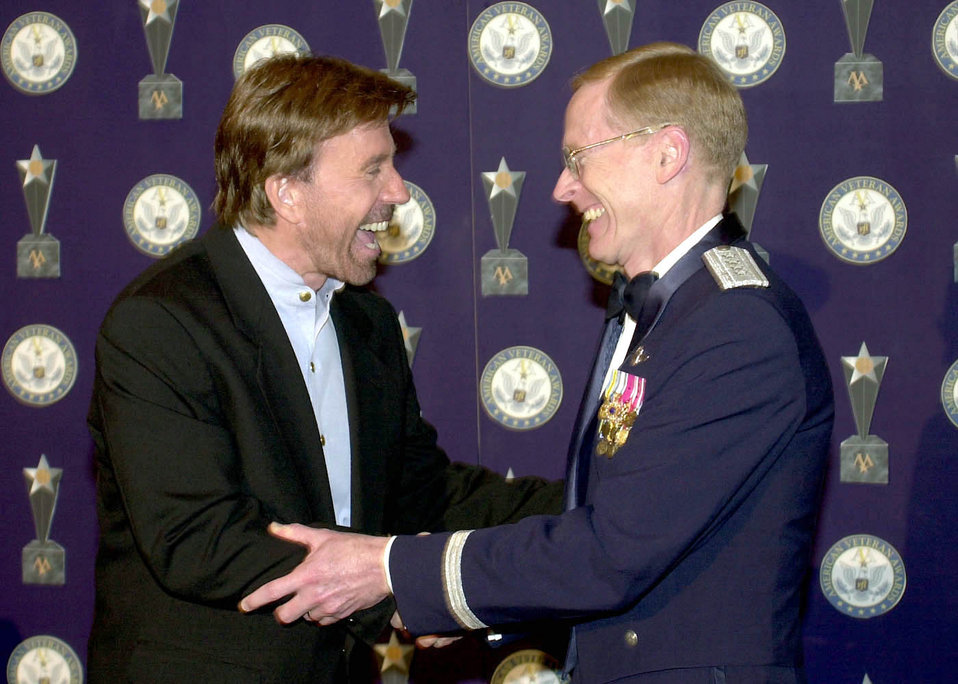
Veteran of the Year

BEVERLY HILLS, Calif. -- Vice Chief of Staff of the Air Force, General John W. Handy, presents actor Chuck Norris with the